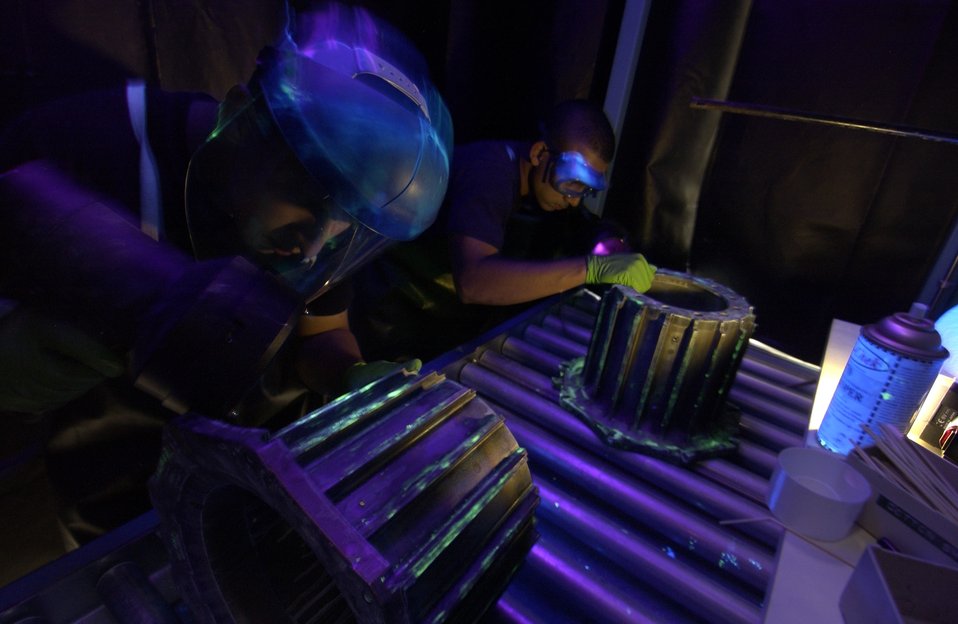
NDI inspections

CHARLESTON AIR FORCE BASE, S.C. - Airman 1st Class Kenny Payamps (left) and Senior Airman Jorge Vargus use fluorescent penetrant to inspect main landing gear assemblies for cracks from a C-17 Globemaster. Both Airmen are nondestructive inspection testing journeyman assigned to the 437th Maintenance Squadron.